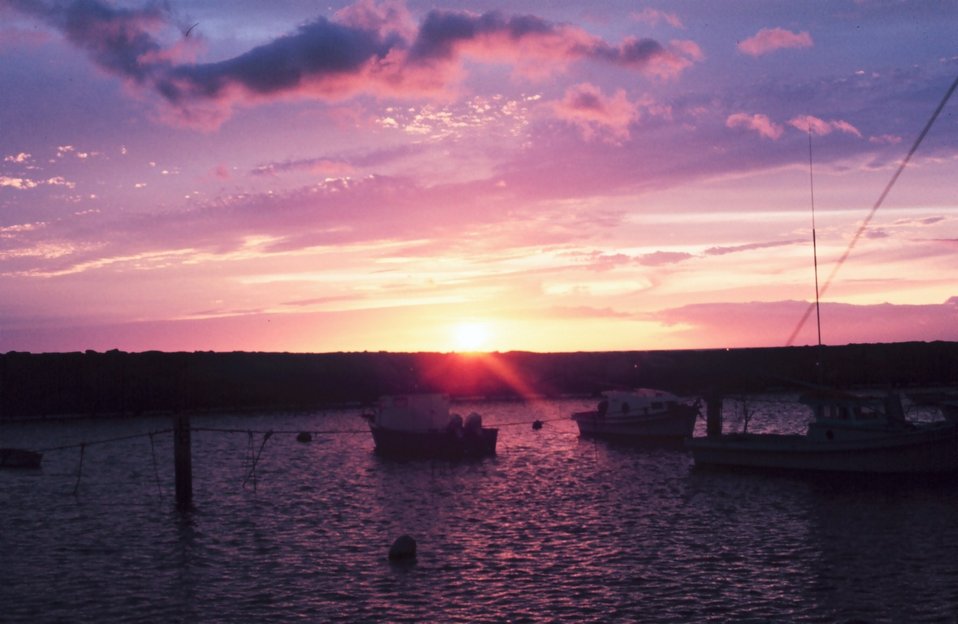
Waianae coast -southwest Oahu